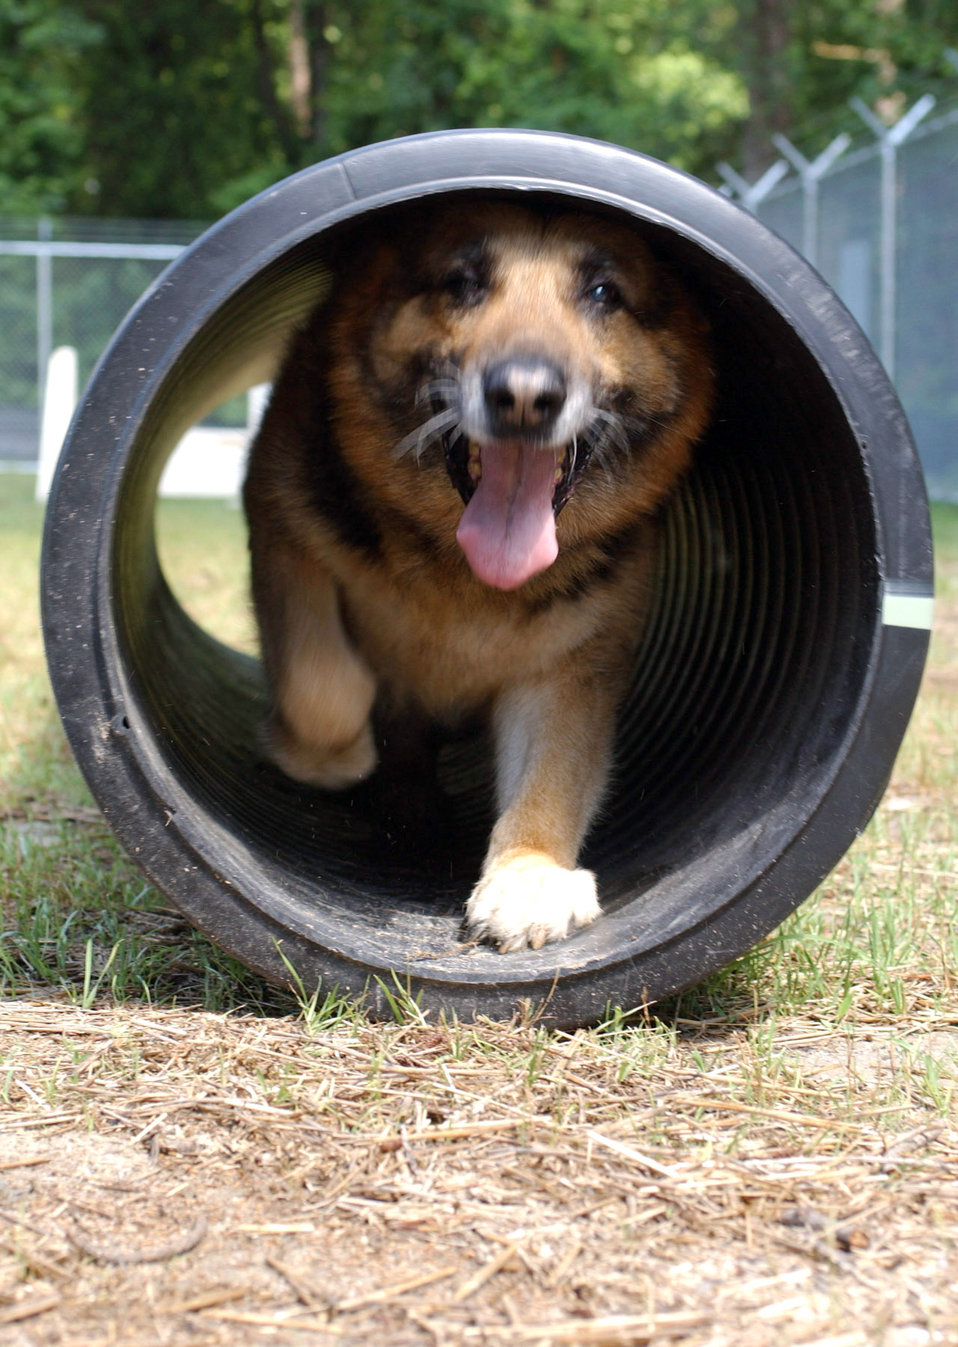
Military working dog Eiko

Eiko is an explosive detection dog that has worked at Seymour Johnson Air Force Base, N.C., since 1996. He runs the obstacle course daily for fitness training. Almost ready to retire, he's served our country honorably with secret service assignments and deployments to Southwest Asia and the Kenyan Embassy.